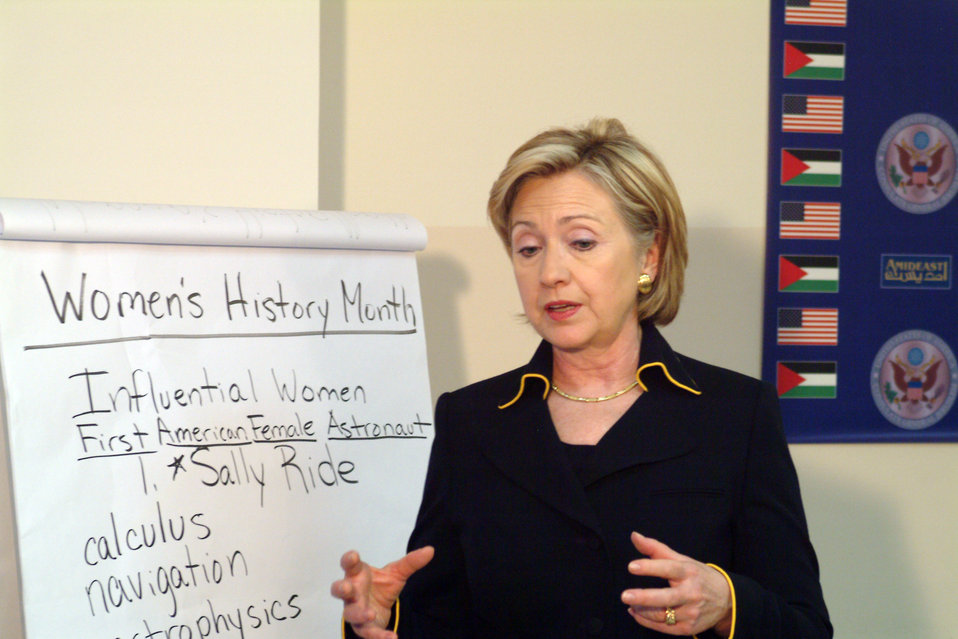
Secretary Clinton at Amideast Event

Secretary Clinton at an Amideast event in Ramallah March 4, 2009.